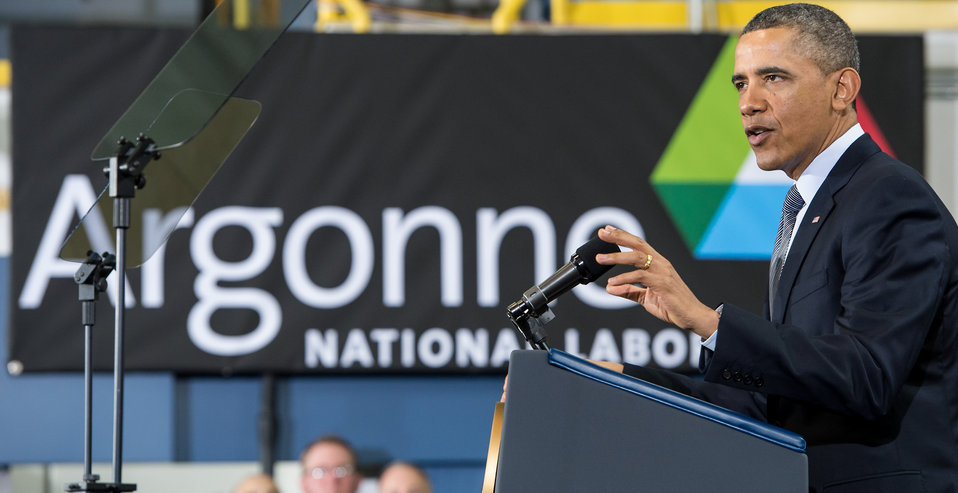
President Obama visited Argonne National Laboratory to tour lab facilities and discuss American's energy policies during a news conference.